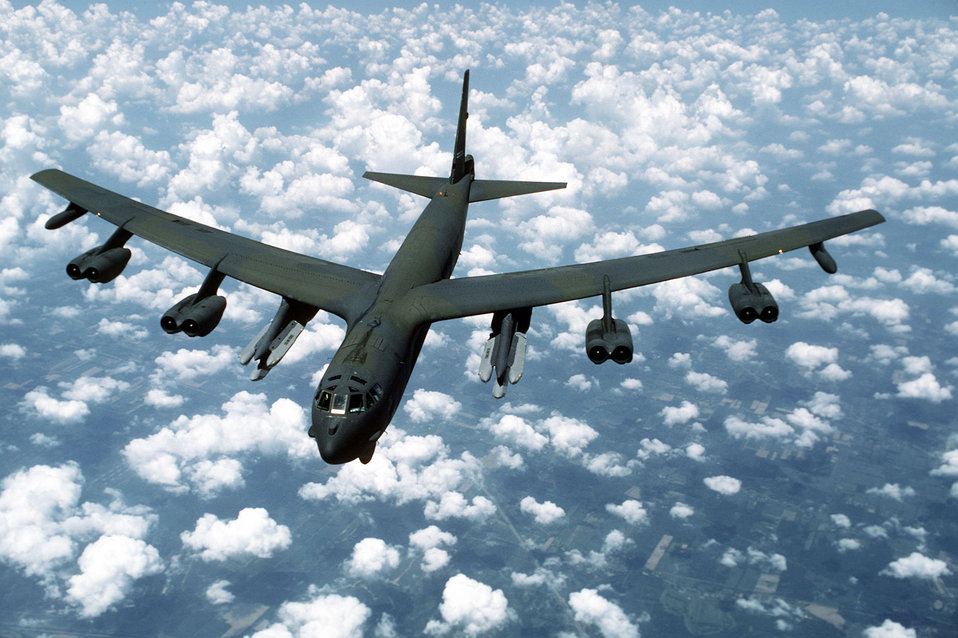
B-52G Stratofortress

1950's -- An air-to-air front view of a B-52G Stratofortress aircraft from the 416th Bombardment Wing armed with AGM-86B Air-Launched Cruise Missiles .